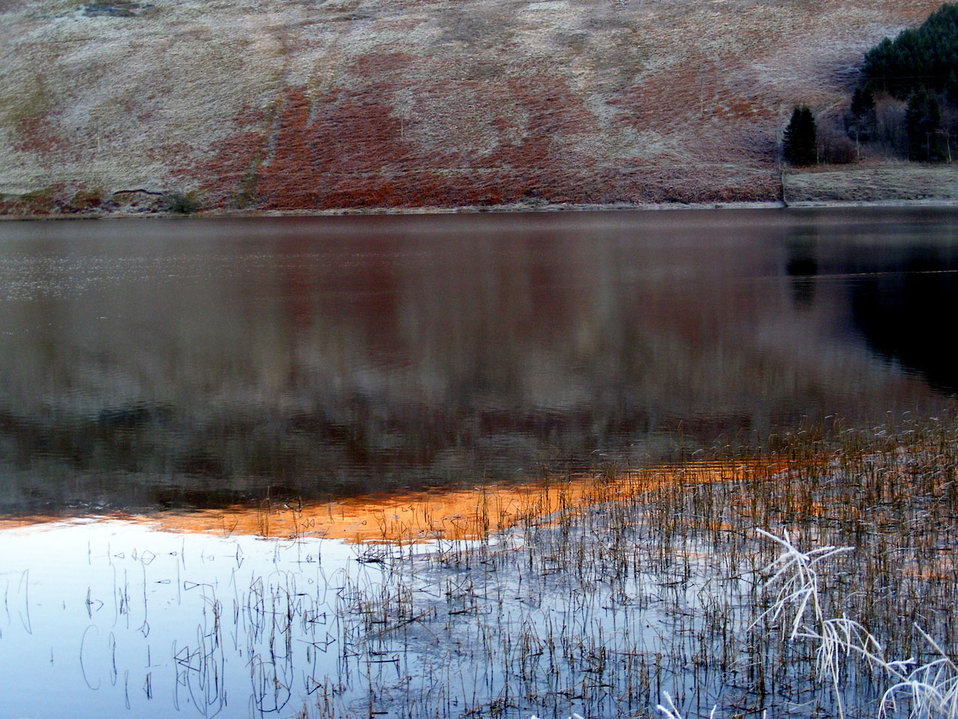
Reflections

Sunset on st mary loch, scottish borders.